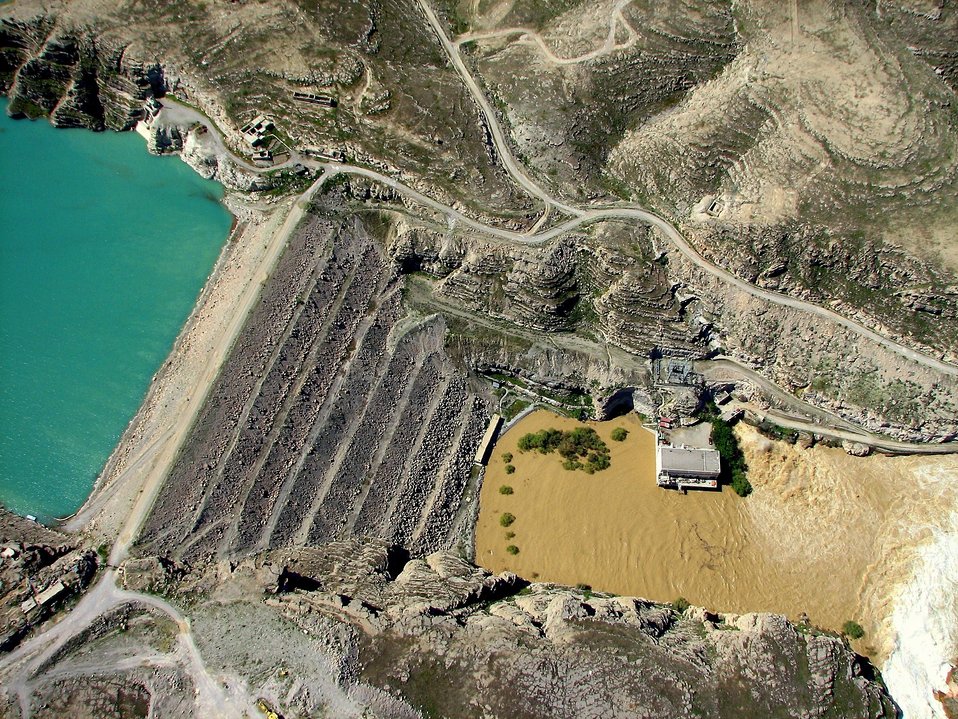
Kajaki 2